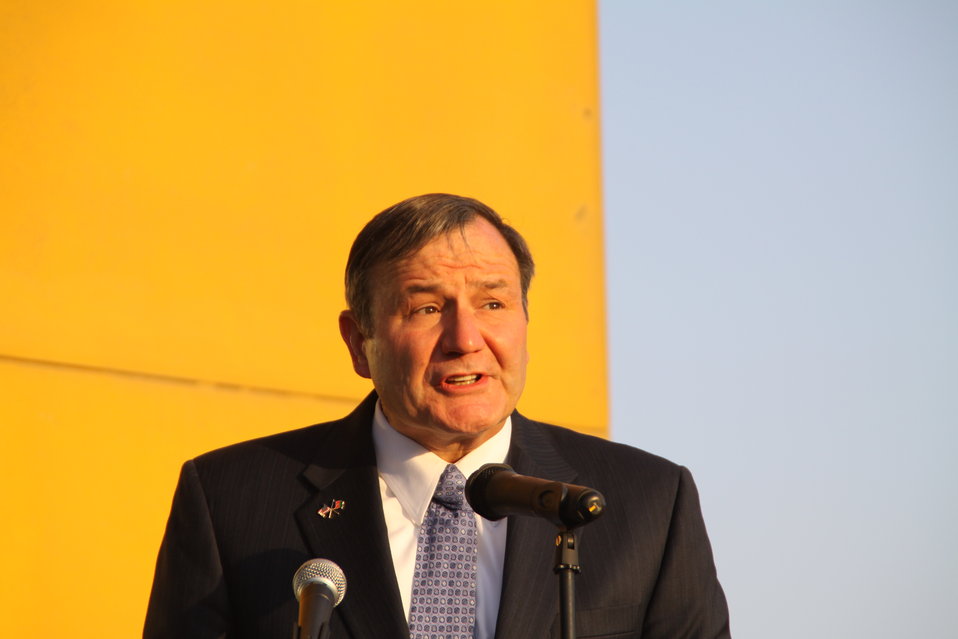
Ambassador Eikenberry